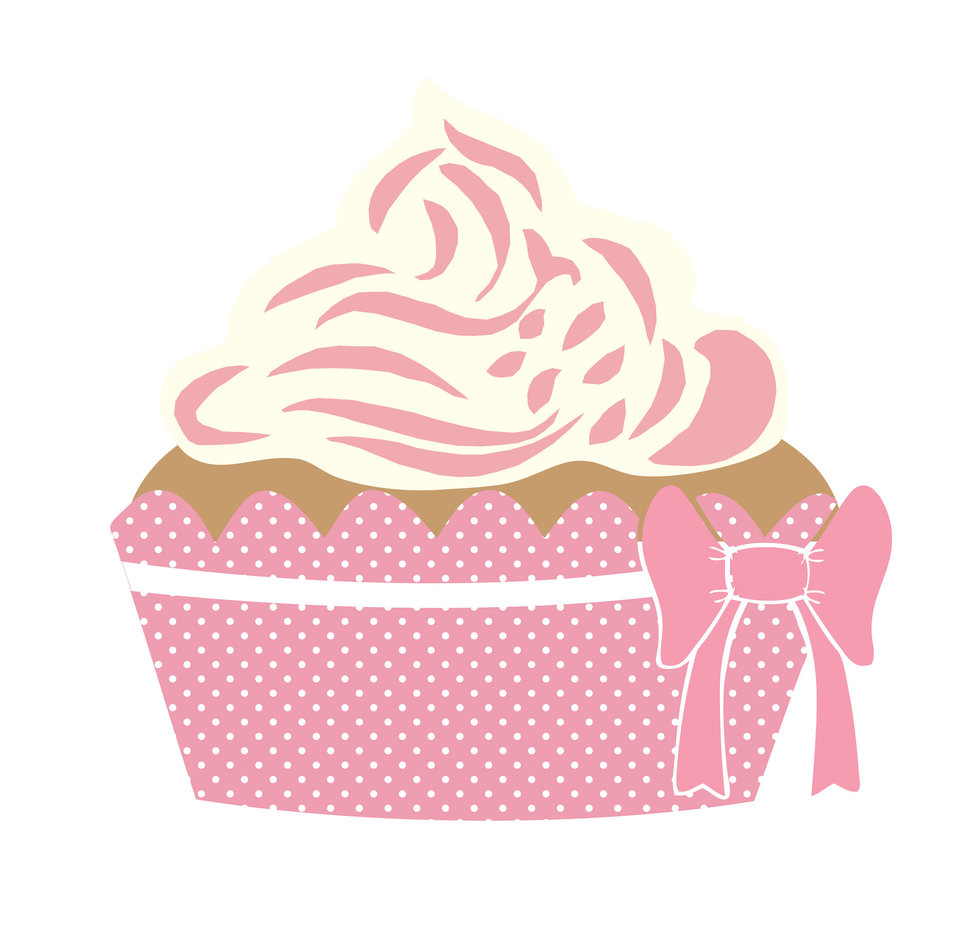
Cute cupcake pink clipart

Cute vanilla cupcake with pink and white polka dots clipart for scrapbooking.